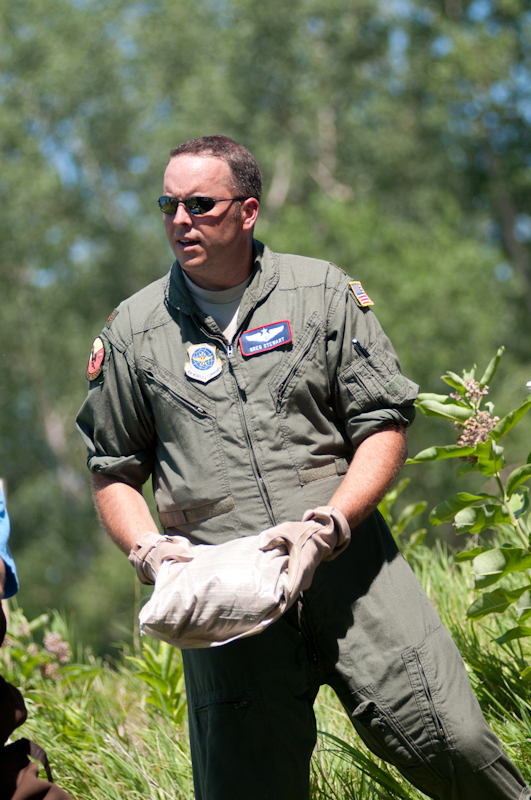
Air Guardsmen fight flood

An Airman from the Missouri Air National Guard's 139th Airlift Wing in St. Joseph, Mo., prepares to hand off a sandbag to a fellow Airman June 30, 2011, in an effort to fight rising flood waters near Elwood, Kan.